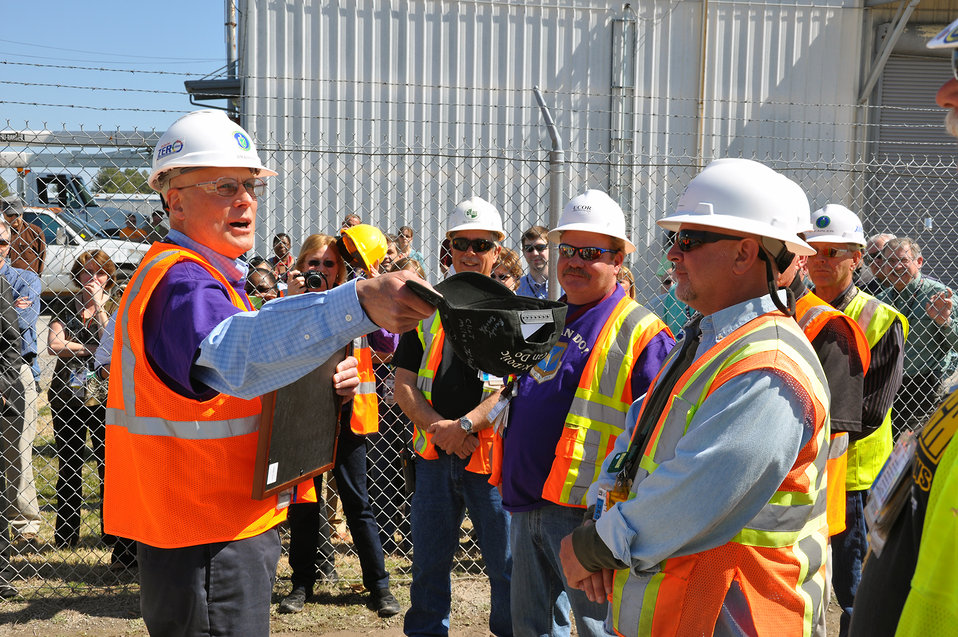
K-25 Demolition Last Load Oak Ridge 2014

14-032 Photo by Wayne McKinney Jim Kopotic speaks to demolition workers 3-11-214 Oak Ridge Tennessee